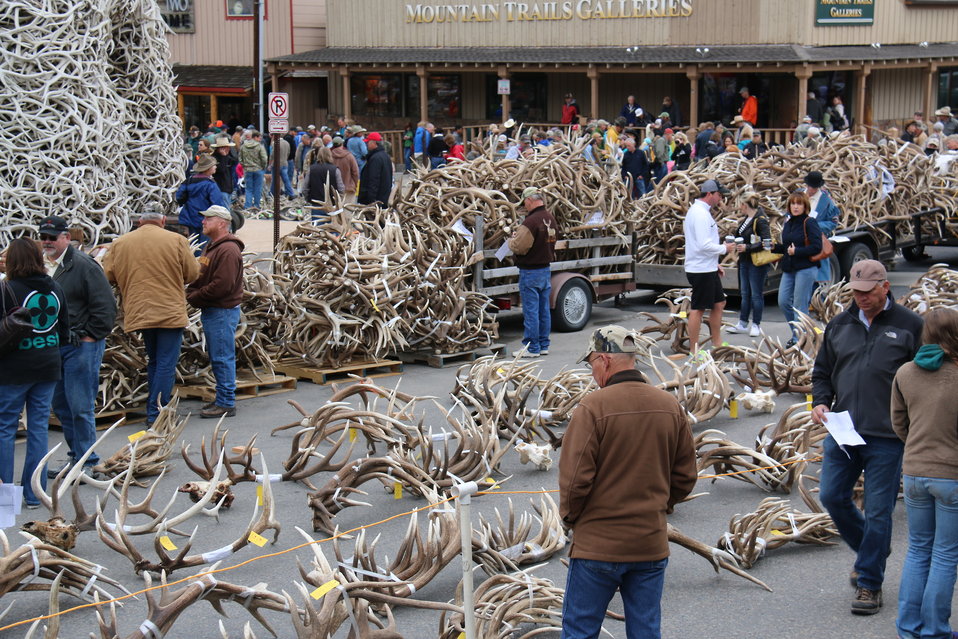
Pre-Sale Preview

Scout leaders lay the bundles out on the east side of Jackson's Town Square early on the morning of the auction. Prospective bidders and spectators have a chance to preview the lots prior to the start of the auction.